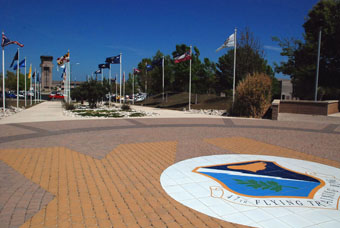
Laughlin Air Force Base, Texas

The plaza and tower at Laughlin Air Force Base, Texas.